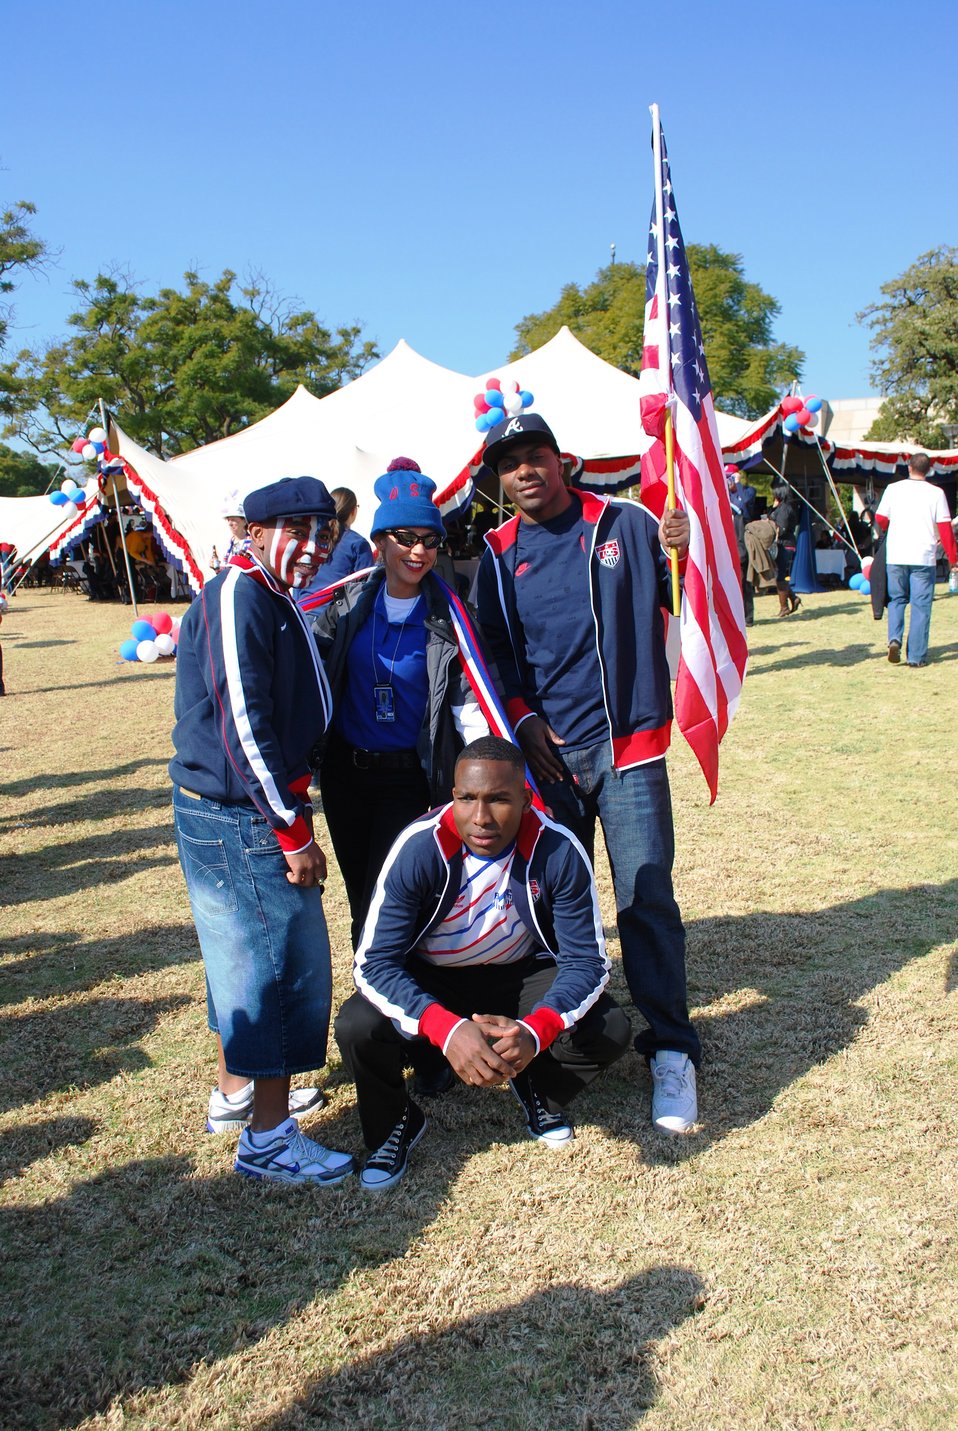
Fans Smile for a Photo

Fans smile a photo at the Team USA pep rally before the U.S. vs. Algeria World Cup match on June 23, 2010, in Pretoria, South Africa.